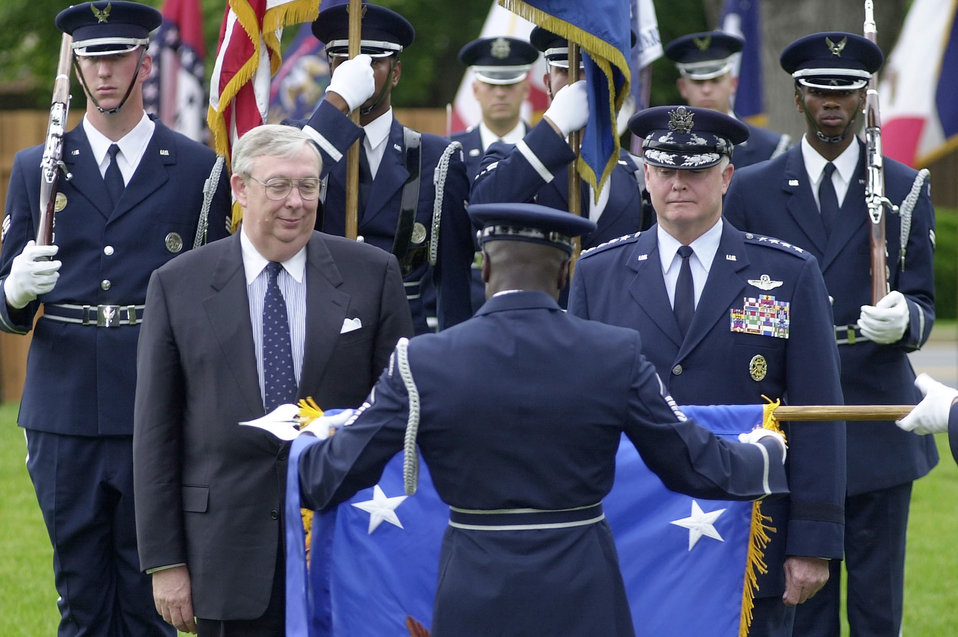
The flag

WASHINGTON -- The 20th Secretary of the Air Force, Dr. James G. Roche (left) and, his host, Chief of Staff of the Air Force Gen. Michael E. Ryan, watch as the SECAF's flag is unfurled by a member of the U.S. Air Force Honor Guard during a full honors review and welcome to the Air Force ceremony for the newly sworn in SECAF, Bolling Air Force Base, Washington, D.C., June 6, 2001. Roche and Ryan started the day by testifying before the Senate Appropriations Committee, Subcommittee on Defense which was Roche's first trip to Capital Hill in his capacity as SECAF. Roche was sworn in on June 1, 2001 during a Pentagon ceremony.